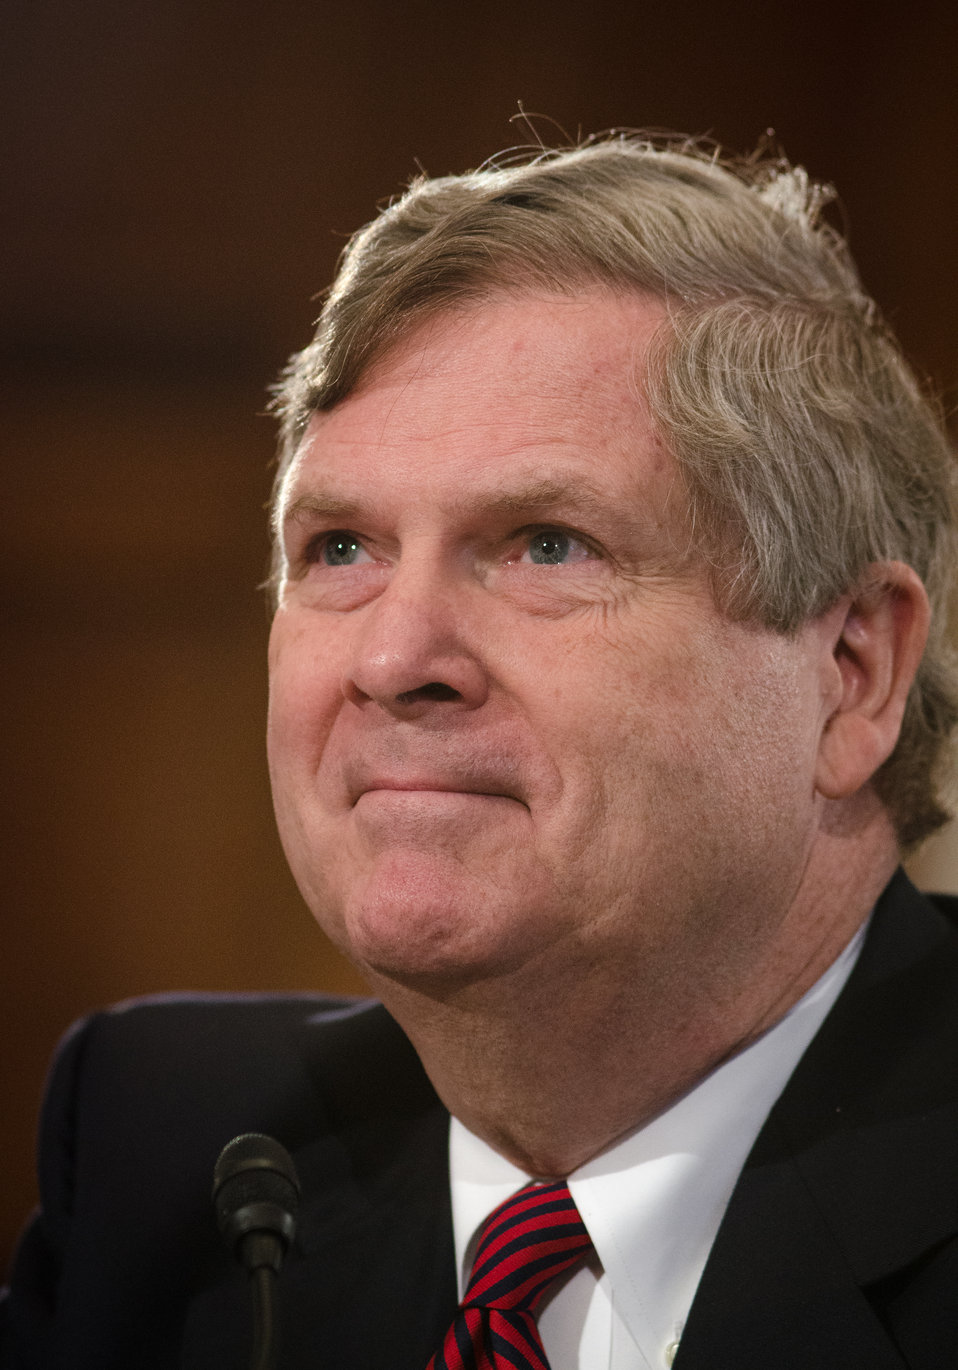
Agriculture Secretary Tom Vilsack testifies before the House Agriculture Committee regarding the “State of the Rural Economy“ at the Longworth House Office Building in Washington, D.C. on Tuesday, Mar. 5, 2013.